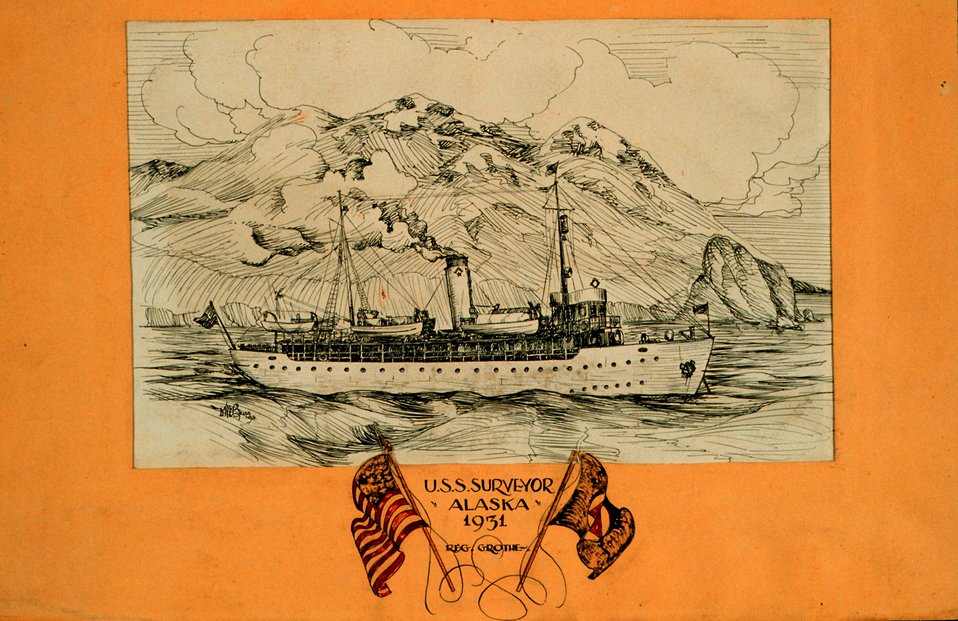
Coast and Geodetic Survey Ship SURVEYOR. In service 1917 - 1956.